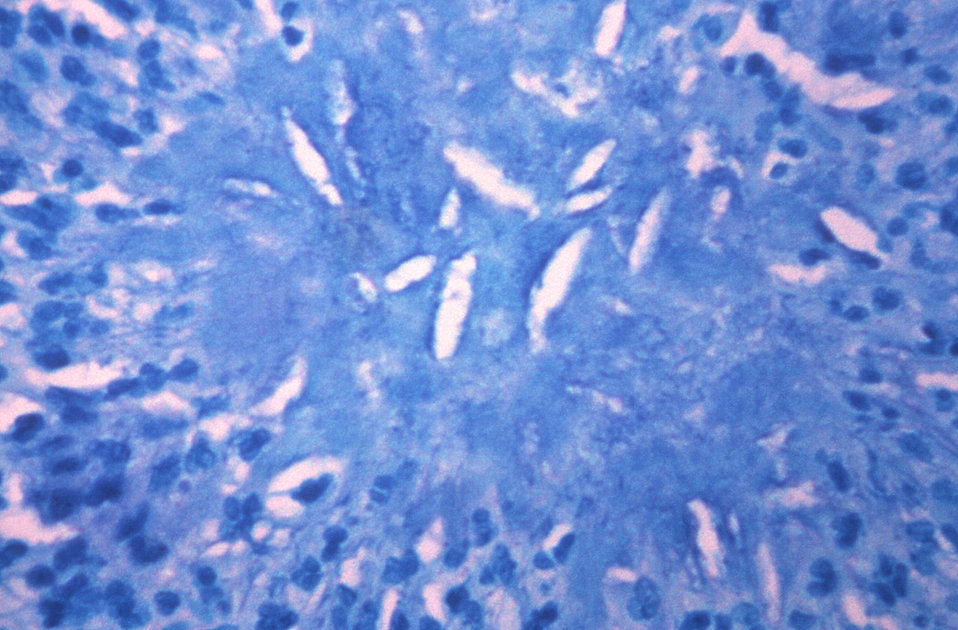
Under a magnification of 200x, and stained using the acid-fast and water-acid staining method, this brain tissue specimen revealed the presence of an actinomycotic sulfur granule, in a rare case of disseminated actinomycosis.